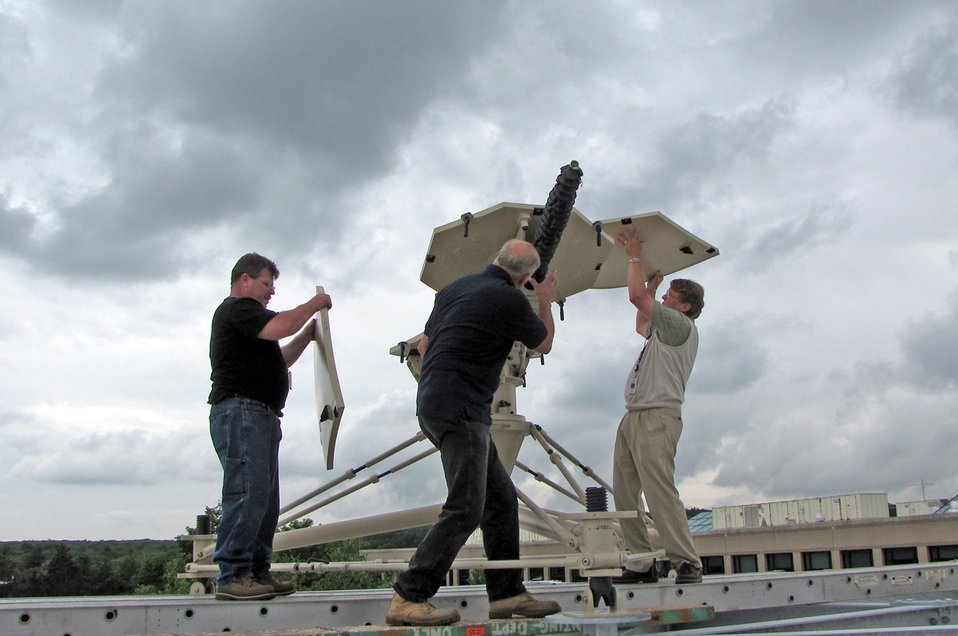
Ground Multi-band Terminal

Members of a combined Electronic Systems Center-MITRE team assemble a Ground Multi-band Terminal antenna on the roof of a MITRE building in Bedford, Mass. Having a system available in the program office allows program experts to troubleshoot reported problems and review terminal changes and enhancements before they are sent to the field.